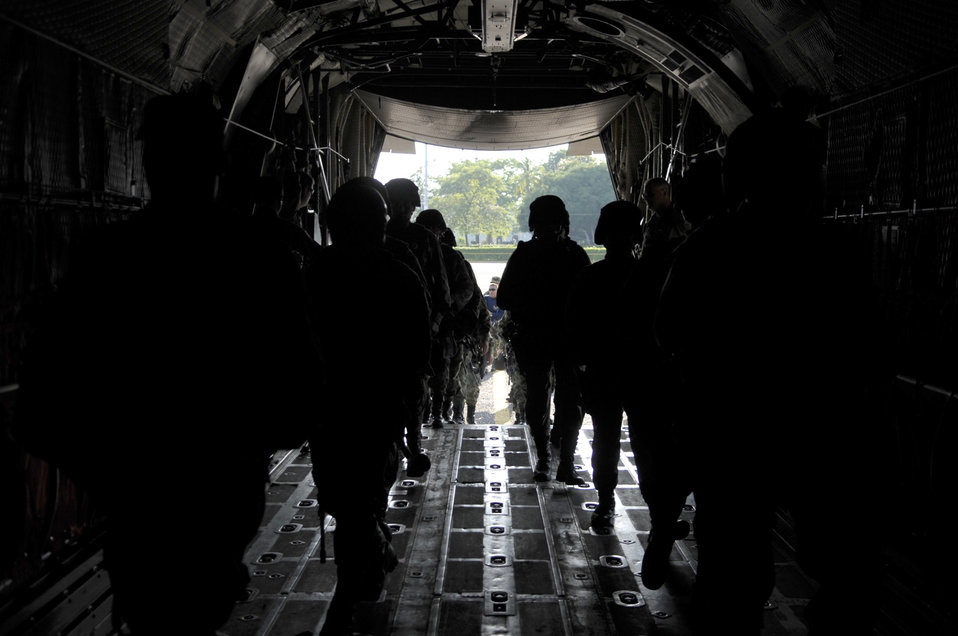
Rescue Airmen exchange knowledge, build partnerships with Colombian airmen

Colombian air force commandos run into the back of a C-130 Hercules during an exercise Sept. 16, 2010, at Palanquero Air Base, Colombia. The exercise was one of many during a weeklong subject matter expert exchange between Airmen from Moody's rescue community and Colombian air force C-130 crews here.